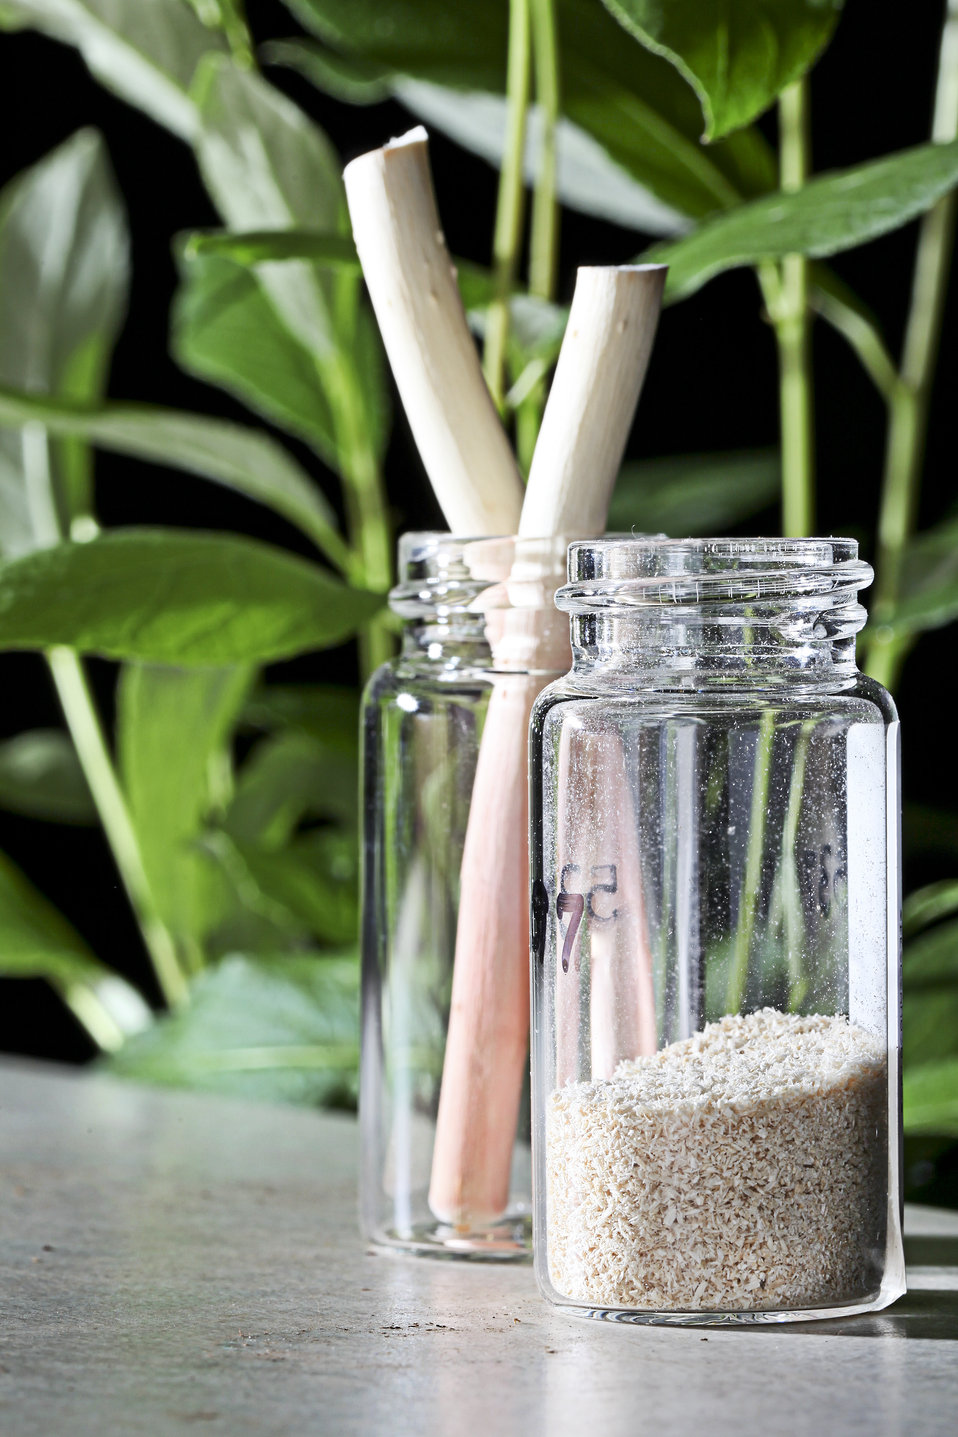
At Oak Ridge National Laboratory, processed Populus Deltoids ground samples, unprocessed segments and live Populus seedlings in the background.
These ground wood samples will be used to determine if higher amounts of sugar and ultimately ethanol can be produce from improved genetic lines of Populus.